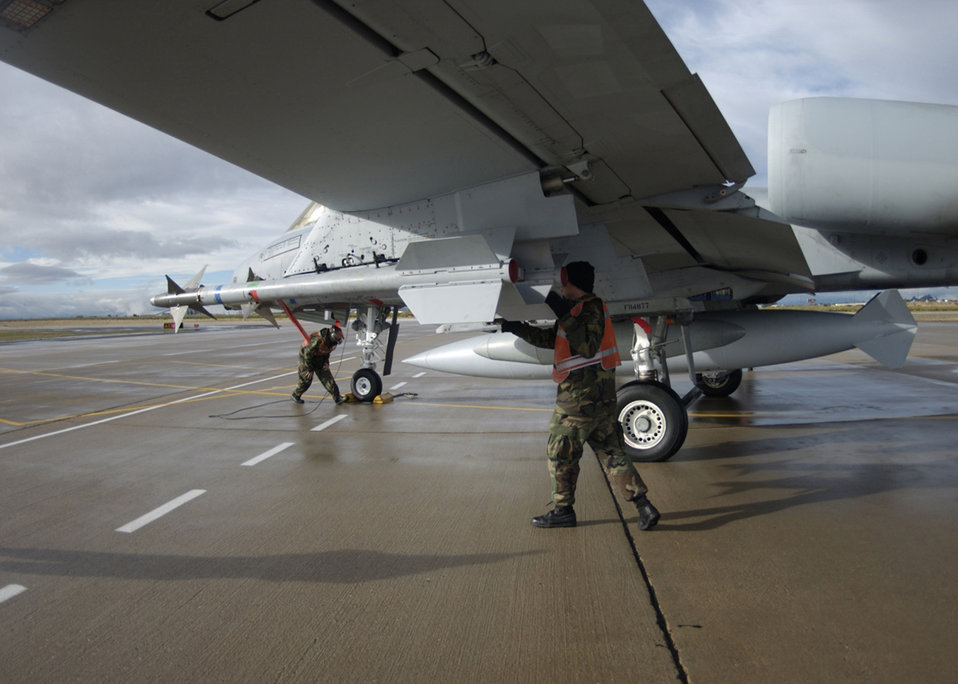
Check it 'n' bolt

DAVIS-MONTHAN AIR FORCE BASE, Ariz. -- Airmen of the 355th Aircraft Maintenance Squadron perform a last-minute maintenance check on an A-10 Thunderbolt II as it prepares to take off here Feb. 12.